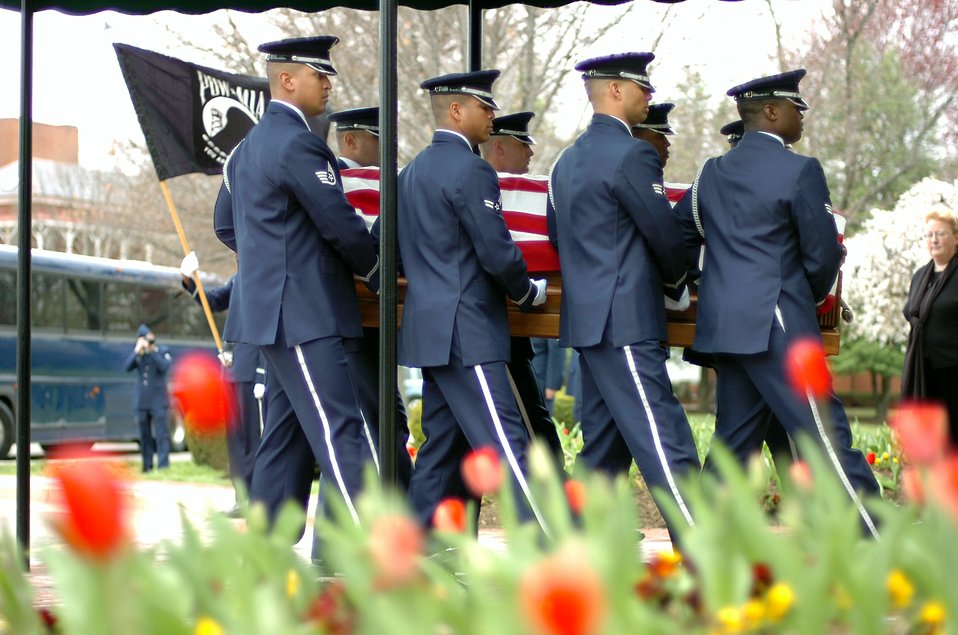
A final resting place

Members of the U.S. Air Force Honor Guard carry the casket of Maj. Perry Jefferson into the Old Chapel on Fort Myer, Va., April 3. Major Jefferson was returned 39 years after he went missing in action in Vietnam.